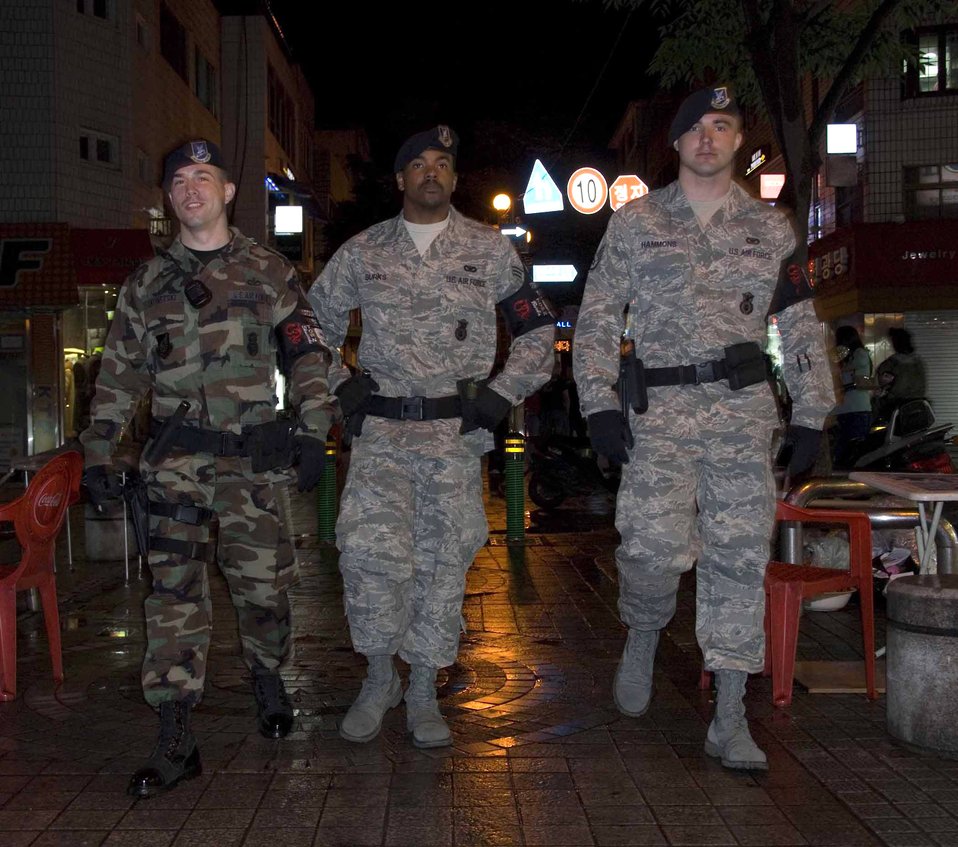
Osan Airmen save lives, property

Staff Sgt. Michael Skonetski (left to right), Senior Airman Michael Burks and Staff Sgt. Erick Hammons patrol the downtown area June 4 outside of Osan Air Base, South Korea. The Airmen were among the first responders after a fire engulfed a local restaurant May 30. They helped evacuate patrons and provided crowd control until local authorities arrived. The three are 51st Security Forces Squadron's town patrol members.